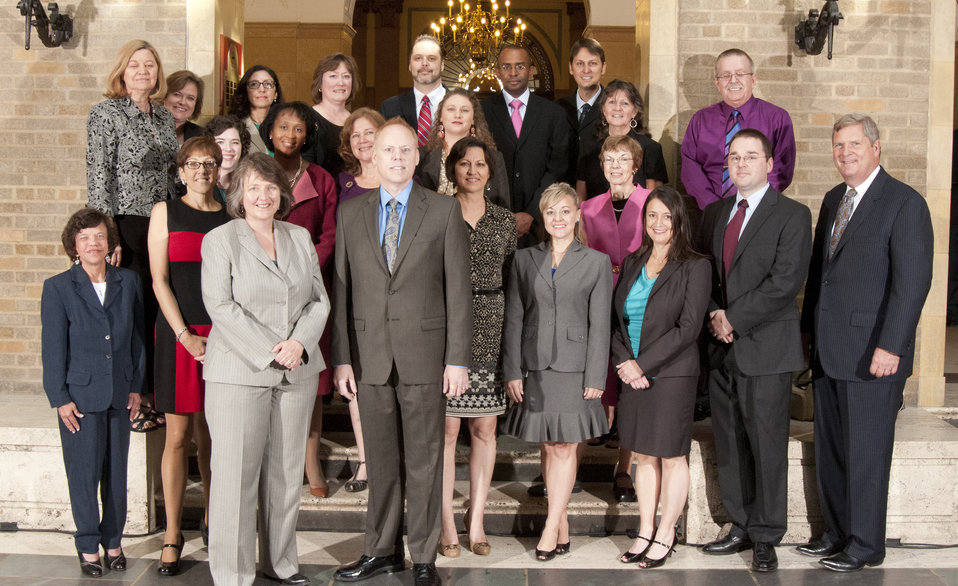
Agriculture Secretary Tom Vilsack and Deputy Agriculture Secretary Kathleen Merrigan with Honor Award Group Myplate/Miplato Comminication Initiative, Center for Nutrition Policy and Promotion (CNPP) on the patio of the U.S. Department of Agriculture in Washington, D.C. on Wednesday, Sept. 12, 2012. The MyPlate/MiPlato Communications Initiative planned, designed, created, launched, and implemented the new USDA MyPlate/MiPlato communications initiative to encourage healthy eating and lifestyles based on the Dietary Guidelines for Americans.